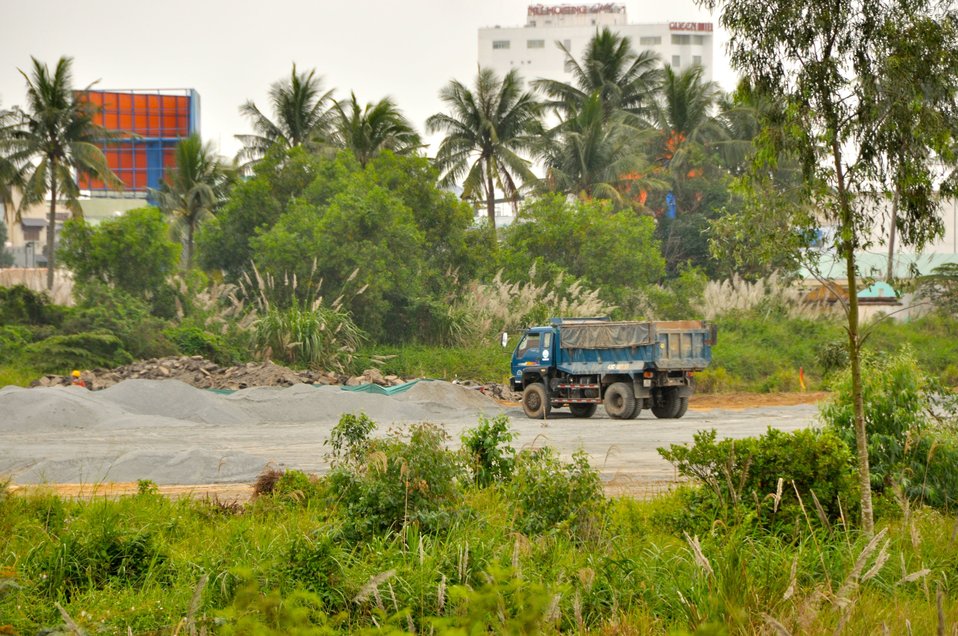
Site Preparation for Environmental Remediation of Dioxin Contamination at Danang Airport

Danang Airport, January 22, 2013